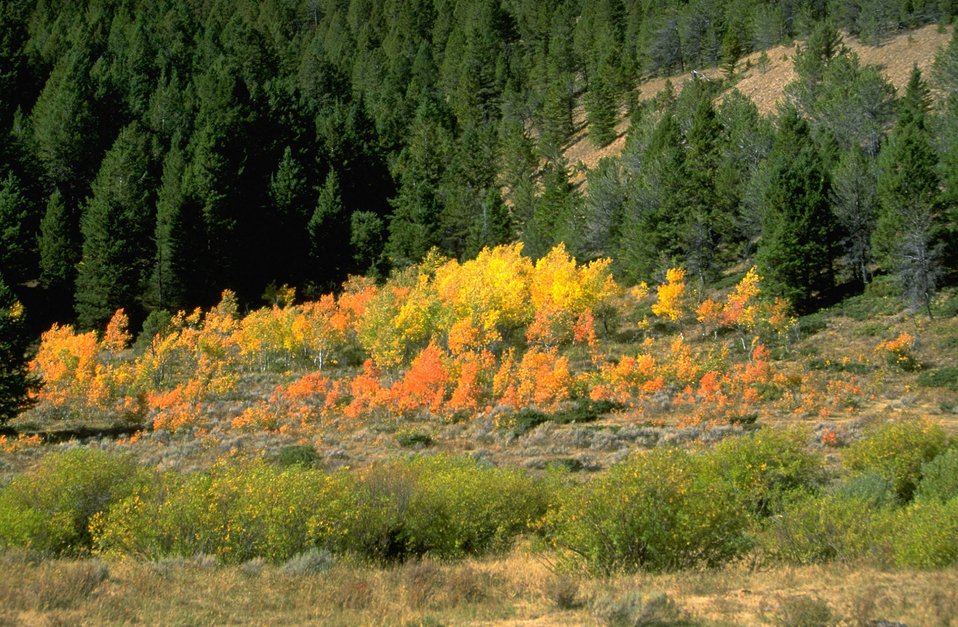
Aspen patch in autumn colors